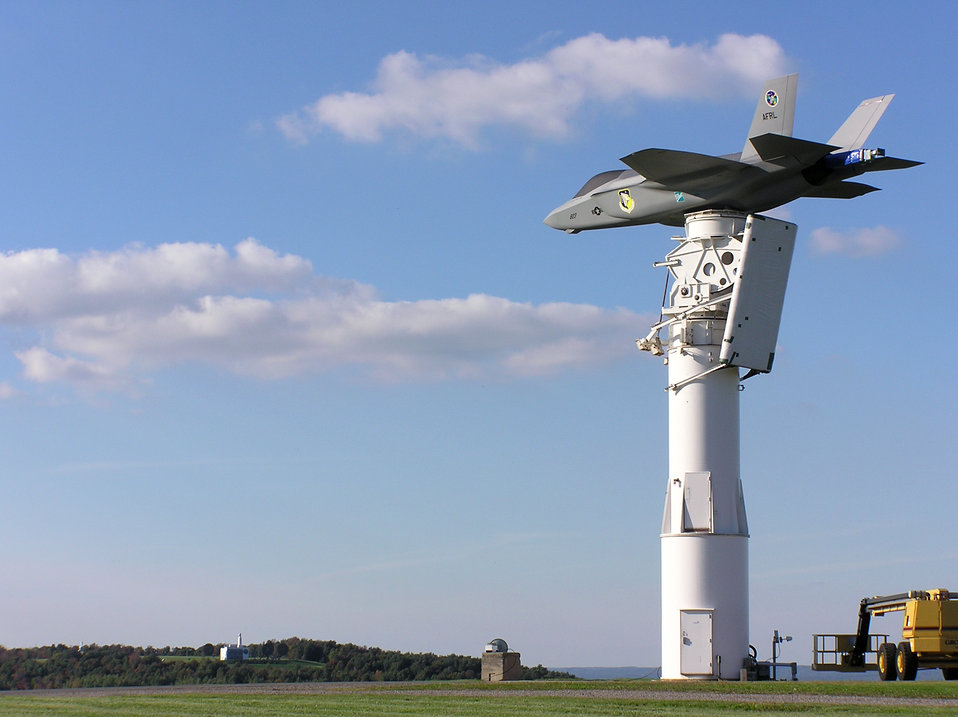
F-35 'flies' above central New York

NEWPORT, N.Y. -- A full-scale F-35 Joint Strike Fighter model is perched atop a pedestal overlooking a rural valley in central New York. Engineers from the Air Force Research Laboratory's antenna research and measurement facility here are testing the aircraft's sophisticated antenna. The model weighs 8,500 pounds and has the capability to simulate all three variants of the fighter.